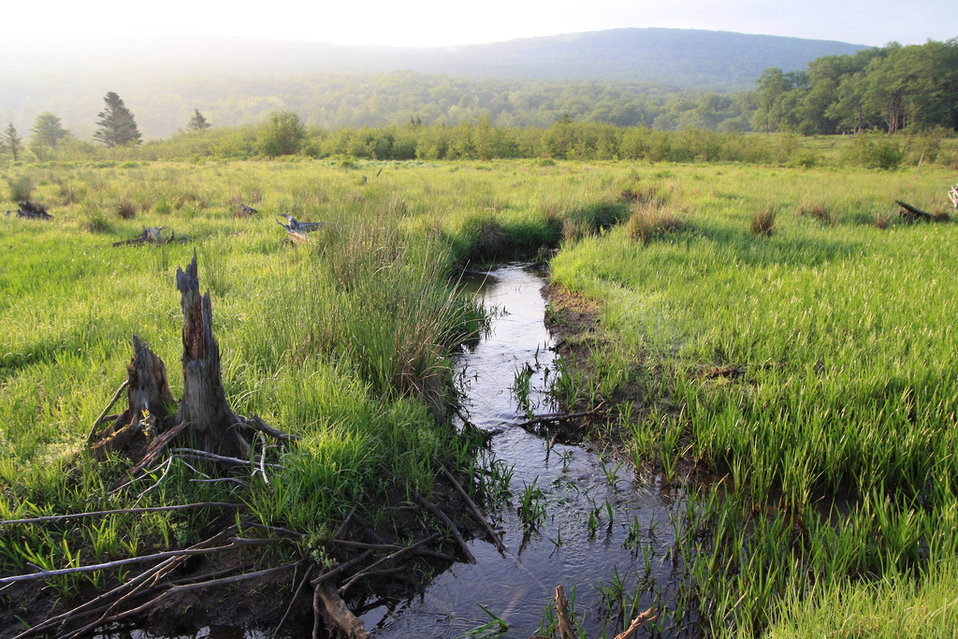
Little Blackwater River Headwaters

The 'Little Black' winds through a headwater wetland in one of the Canaan Valley National Wildlife Refuge's most inaccessible spots.